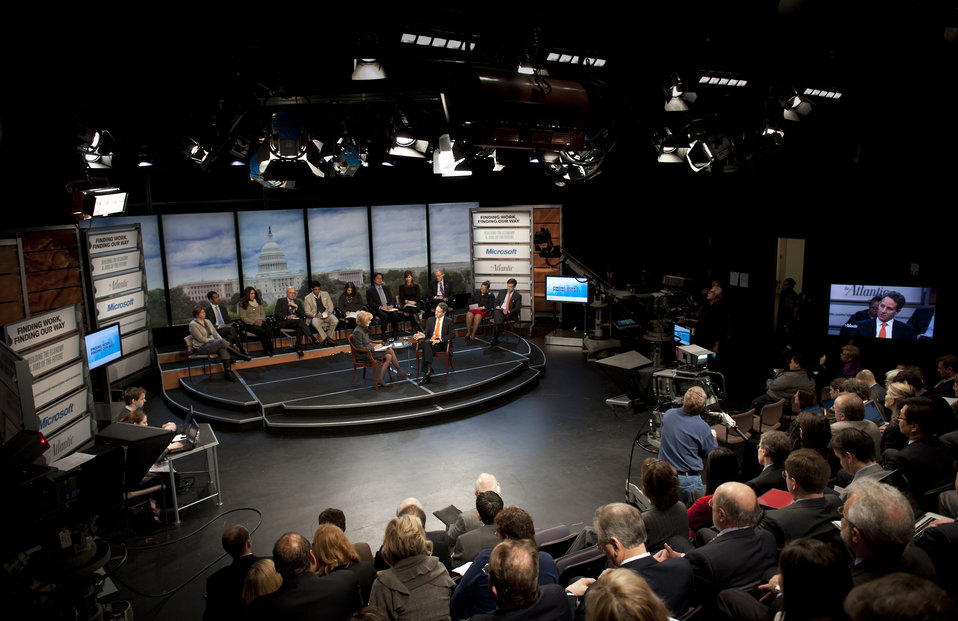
The Atlantic’s “Finding Work, Finding Our Way: Building the Economy and Jobs of the Future” town hall event, 2/9/2011

On Wednesday, February 9, 2011, Secretary Tim Geithner participated in a conversation with Judy Woodruff at The Atlantic’s “Finding Work, Finding Our Way: Building the Economy and Jobs of the Future” town hall event.